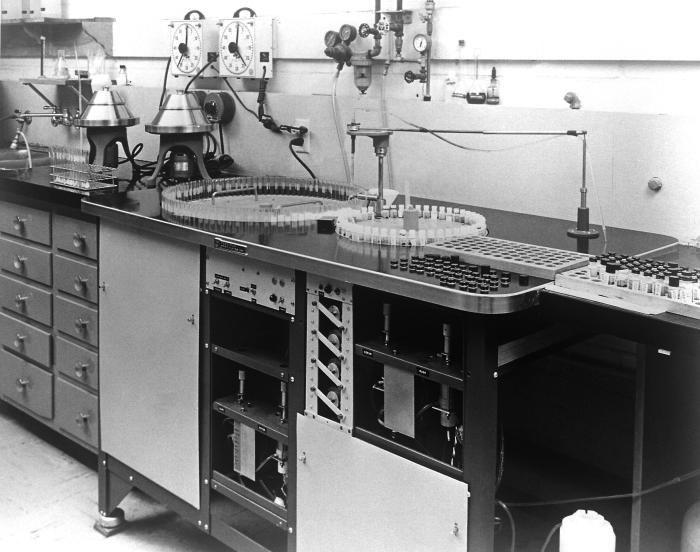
This photograph, taken at a laboratory on the Centers for Disease Control's Chamblee, Georgia campus in 1963, showed a sampling machine that was used in the analytical determination of protein-bound iodine (PBI).